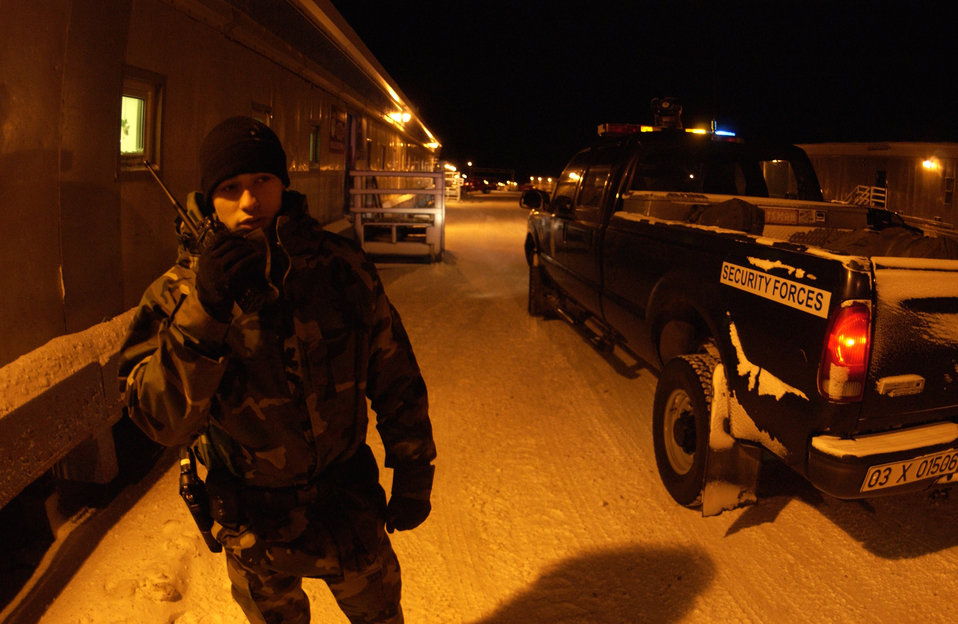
Life at Thule

Airman Pedro Pita conducts a building security check as the temperature hovers close to zero Jan. 25 at Thule Air Base, Greenland. Airman Pita is a security forces member at Thule AB. Airmen serve a one-year remote, unaccompanied tour here in a multinational environment.